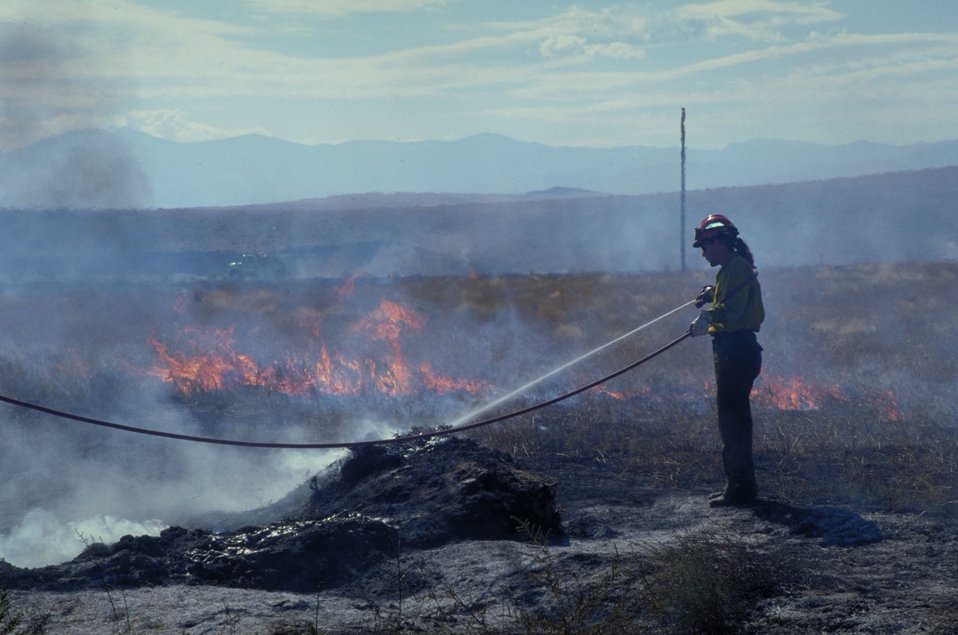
Prescribed burn Fire Season 2000 Lower Snake River District LSRD